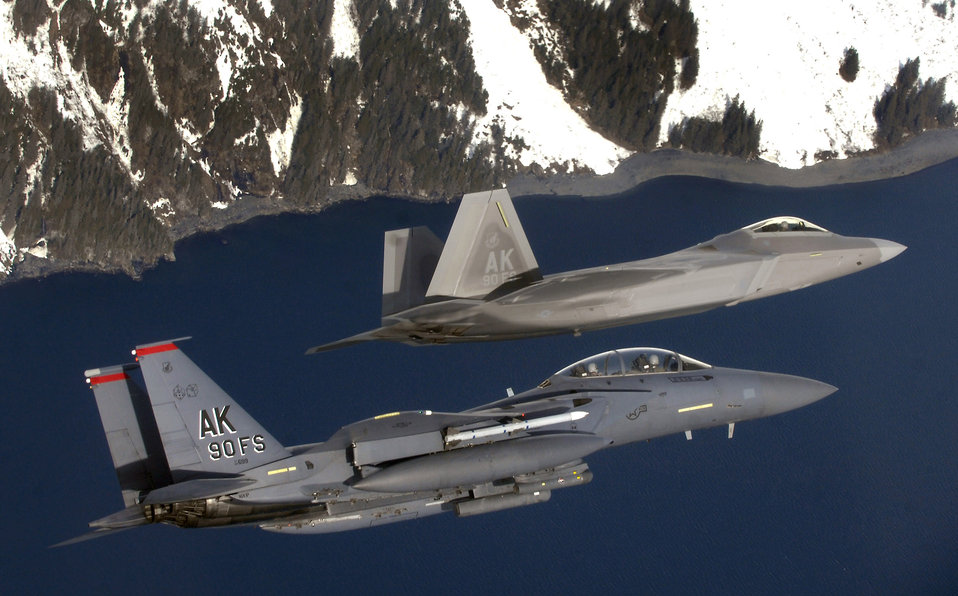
Wings of freedom

An F-15E Strike Eagle and an F-22 Raptor fly over the coast of Prince William Sound, Alaska. Both aircraft are from Elmendorf Air Force Base, Alaska.